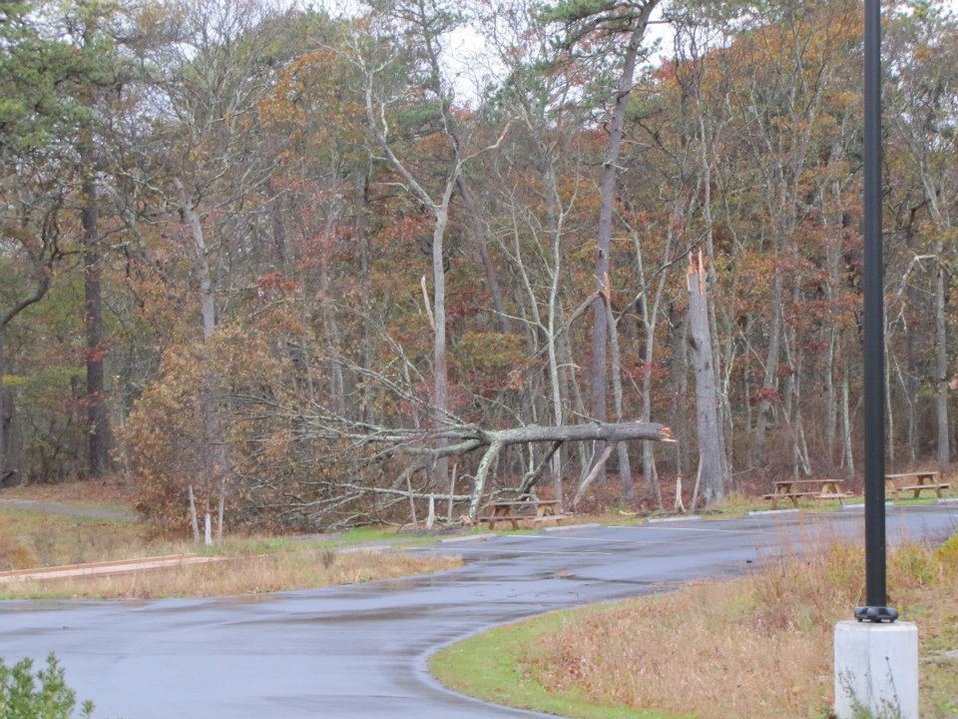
Hurricane damage at Long Island National Wildlife Refuge Complex (NY)

Felled tree at the Wertheim Unit.